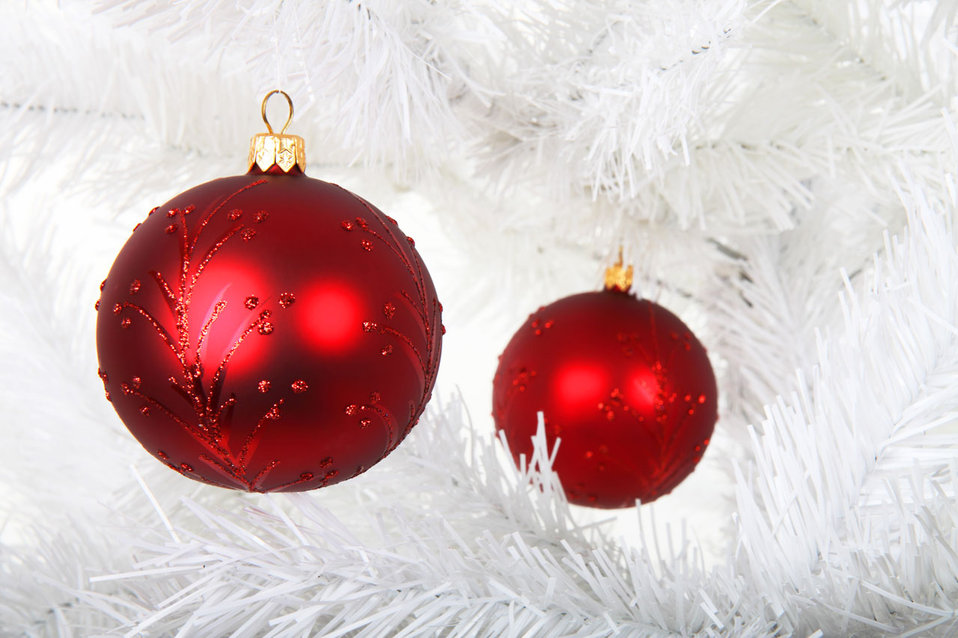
Red christmas baubles on tree

Red christmas baubles on white tree - landscape picture.